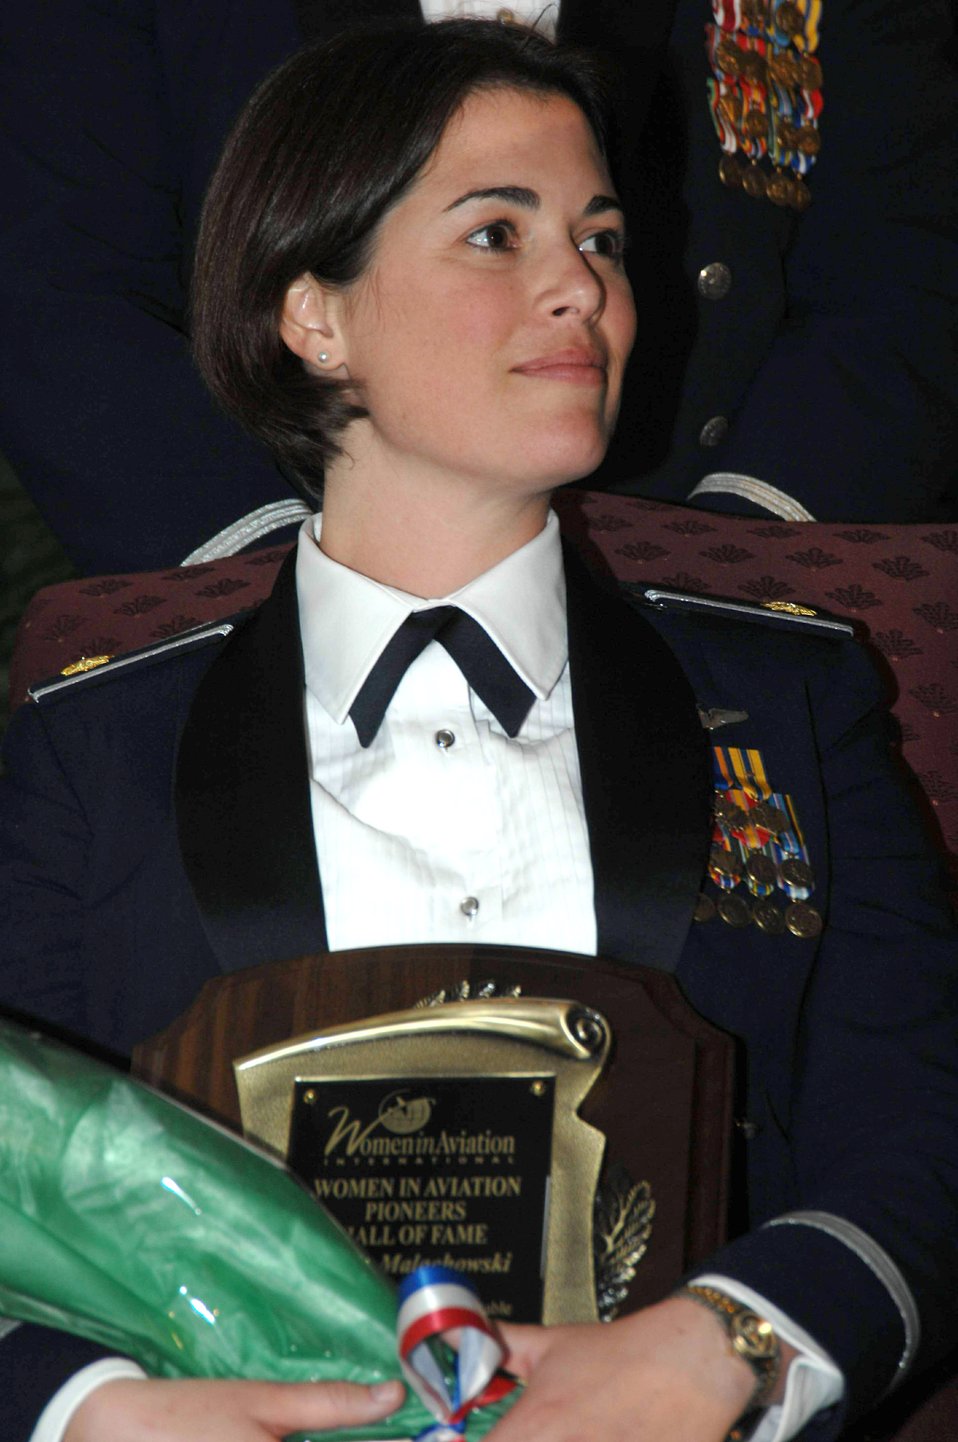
Pilot inducted into women's aviation hall of fame

Maj. Nicole Malachowski holds her plaque after being inducted into the Women in Aviation International's Pioneer Hall of Fame March 15 at the Town and Country Convention Center in San Diego. The major, who piloted the Thunderbirds right wing No. 3, was recognized for being the first female pilot to be part of a U.S. military flight demonstration team.